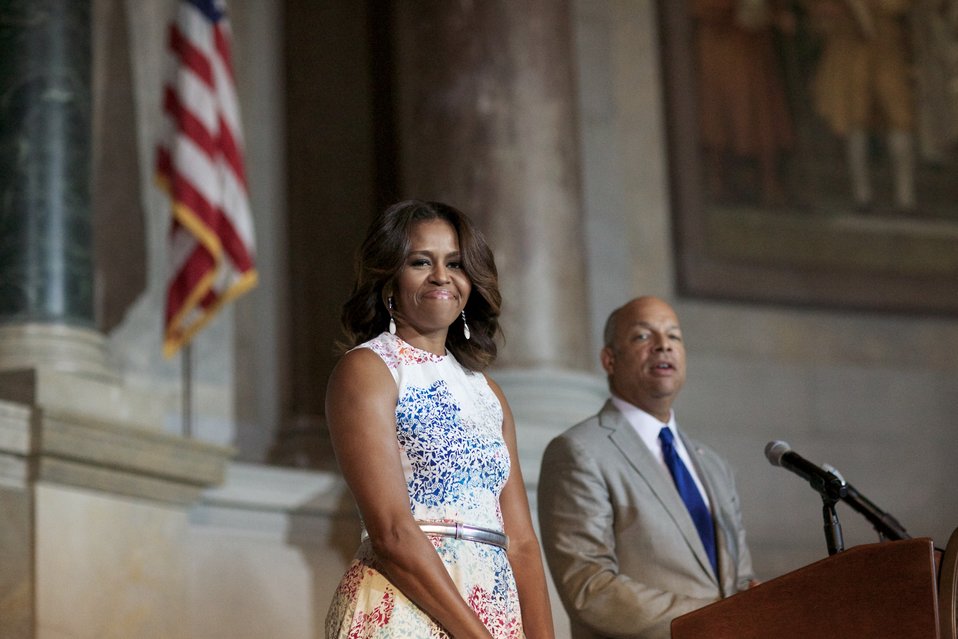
Naturalization Ceremony with Michelle Obama